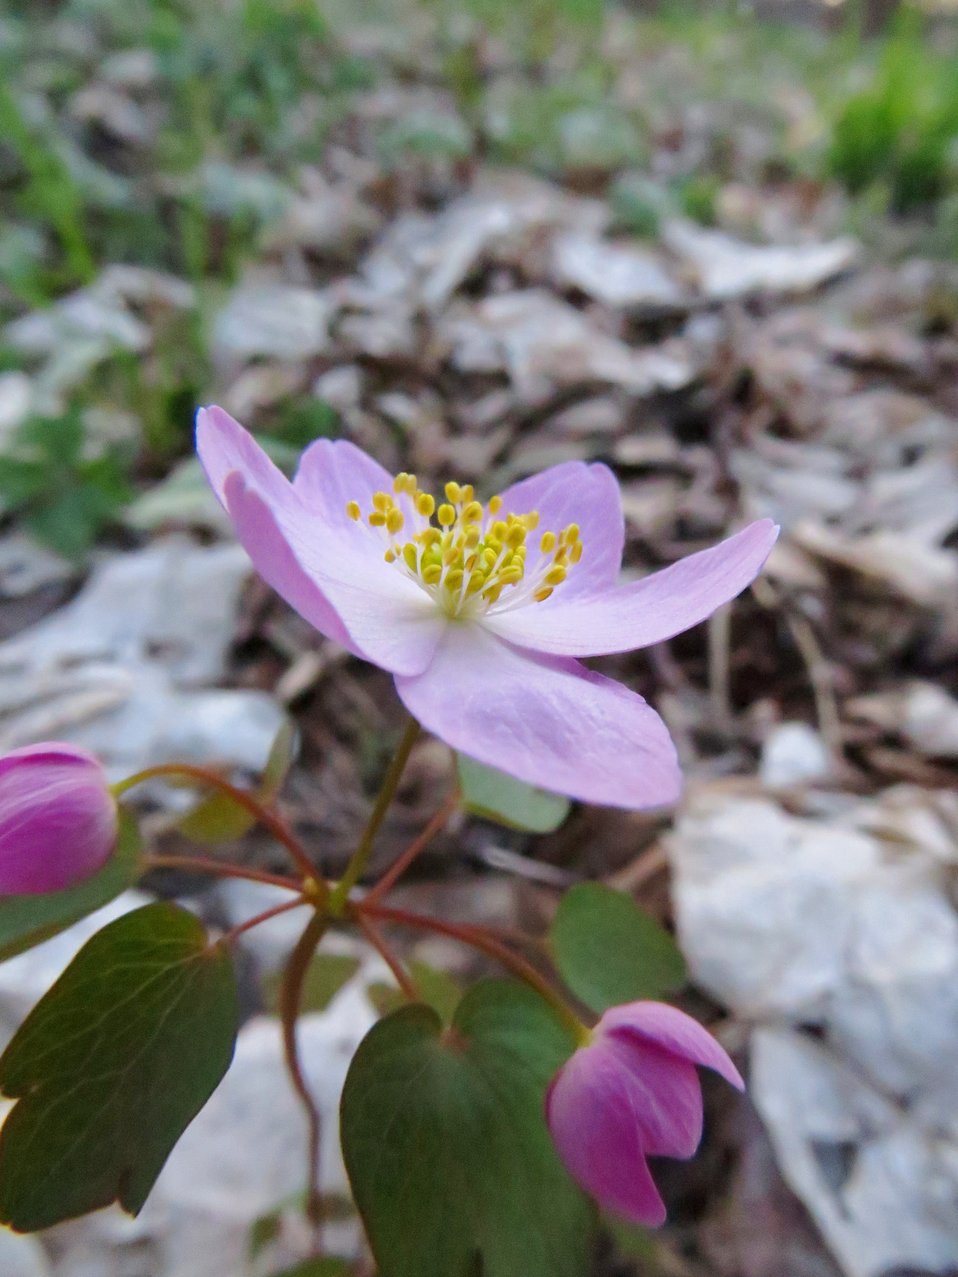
Rue Anemone